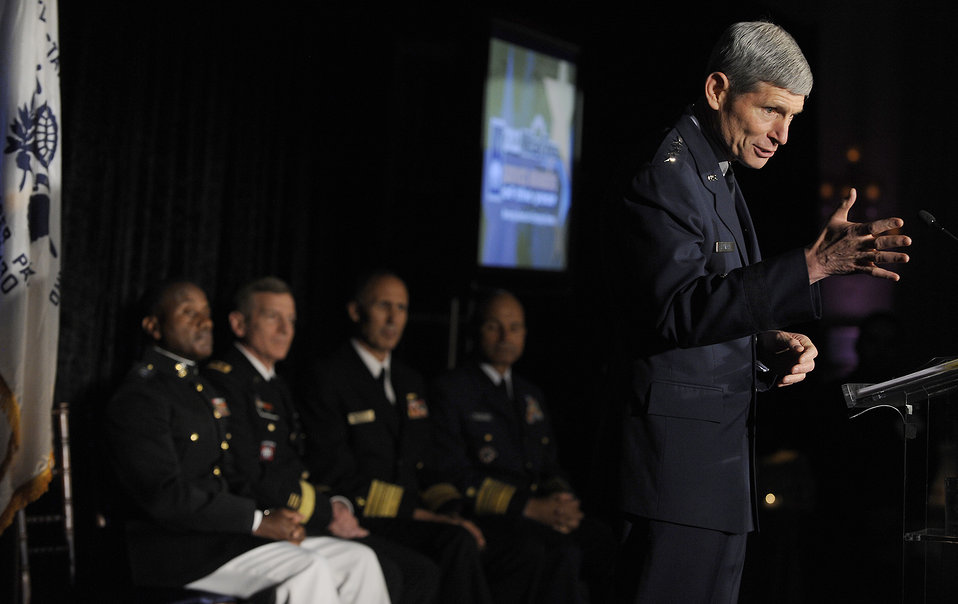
Times Airman of the Year

Air Force Chief of Staff Gen. Norton Schwartz gives opening remarks to attendees of the 2012 Military Times’ Service Members of the Year Awards awards ceremony July 19, 2012, in Washington, D.C., where Schwartz he presented Master Sgt. Brandon Lambert, from the 728th Air Control Squadron, Eglin Air Force Base, Fla., an award with the Military Timesthe 2012 Air Force Times Airman of the Year award.